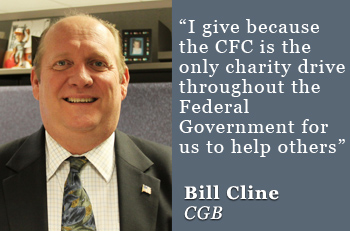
Bill Cline

'I give because the CFC is the only charity drive throughout the Federal Government for us to help others.'